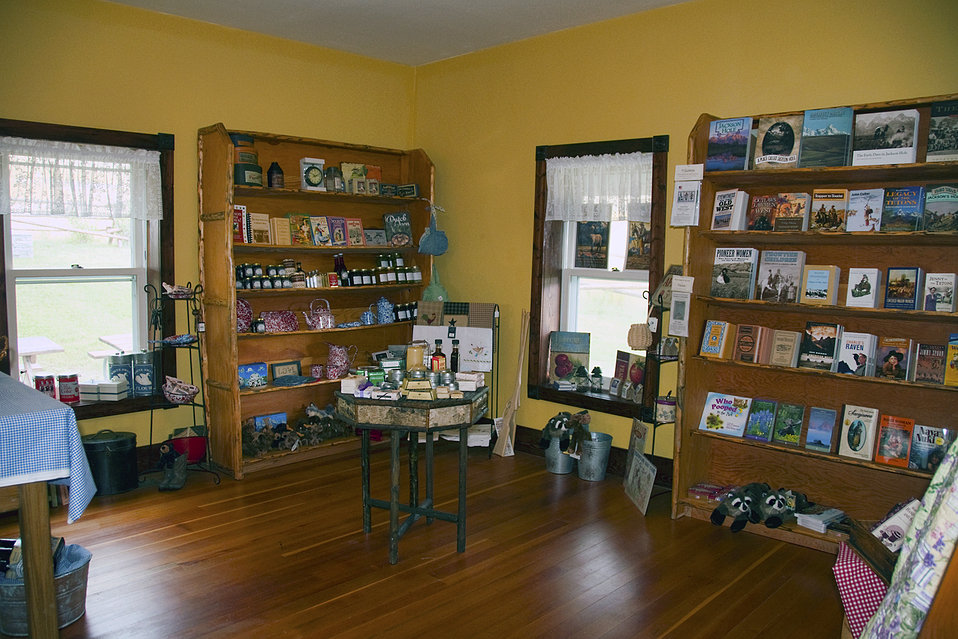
Grand Teton Association Sales Outlet

The Grand Teton Association operates a small sales outlet at the historic Miller House, carrying items representative of the turn-of-the-century era. Twenty percent of the sales are returned to the National Elk Refuge for interpretive and educational projects at the historic site.